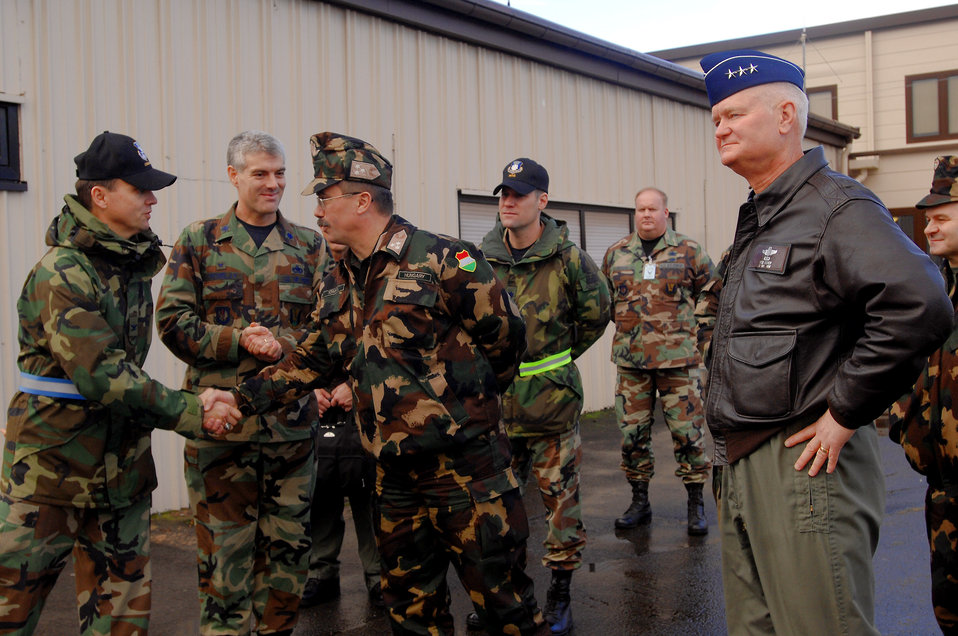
Hungarian AF leader visits Ramstein

435th Air Base Wing Commander Col. Earl Mathews (left) thanks Lt. Gen. Laszlo Tombol, the Hungarian Joint Forces Command commander, for visiting, following a tour of the Joint Mobility Processing Center Feb. 6, on Ramstein Air Base, Germany. Lt. Gen. Robert D.